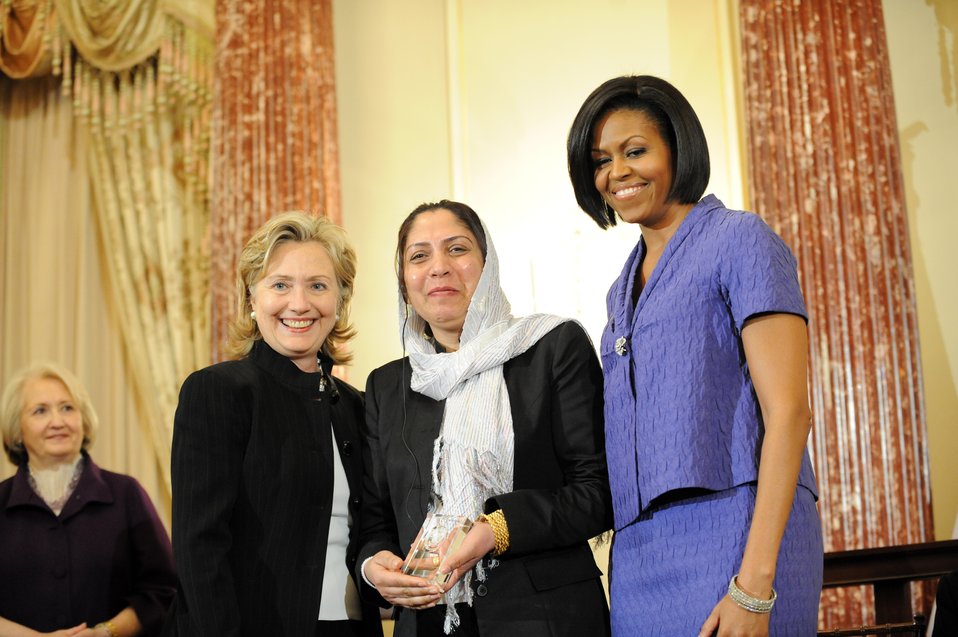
Secretary Clinton With First Lady Michelle Obama and Honoree Col. Shafiqa Quraishi of Aghanistan

U.S. Secretary of State Hillary Clinton and First Lady Michelle Obama stand with Honoree Col. Shafiqa Quraishi of Aghanistan at the 2010 International Women of Courage Awards at the U.S. Department of State, Washington, D.C. March 10, 2010.